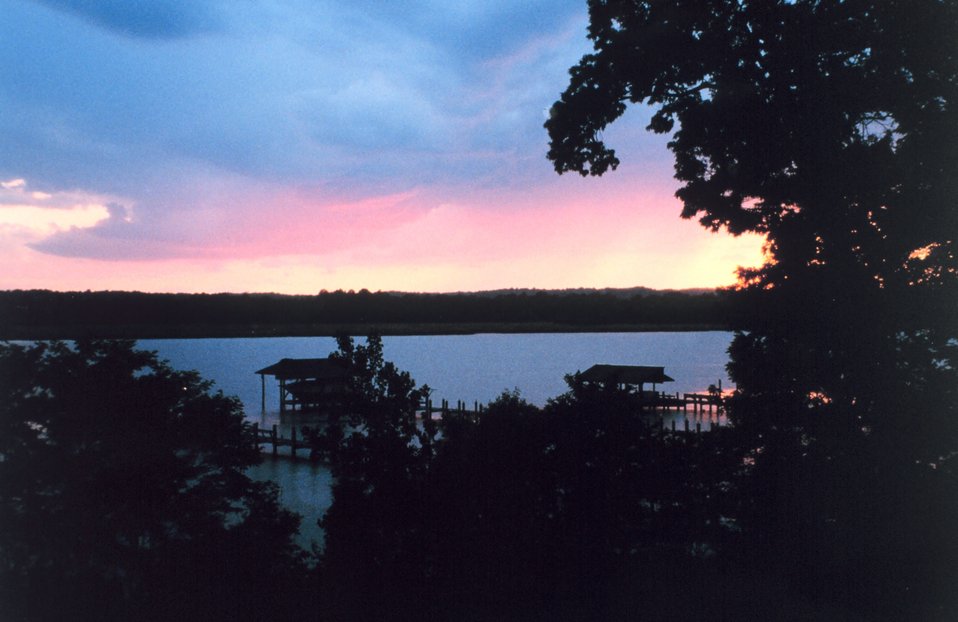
A glorious end to the day.